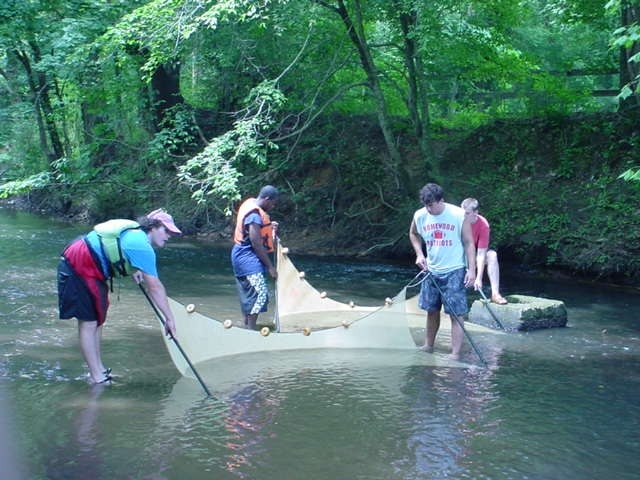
eine, people, river, water, treesUploaded by request of Davyda Hammond

Taken at Cahaba River in Birmingham, Alabama

As part of the Research Experiences for Undergraduates Program at the University of Alabama at Birmingham, we expose undergraduate students to important issues in environmental engineering and sustainability. We traveled with the students to the Cahaba River and encouraged them to use seines to identify the indigenous species in the river. The students used this information to evaluate the current water quality at several points in the river.